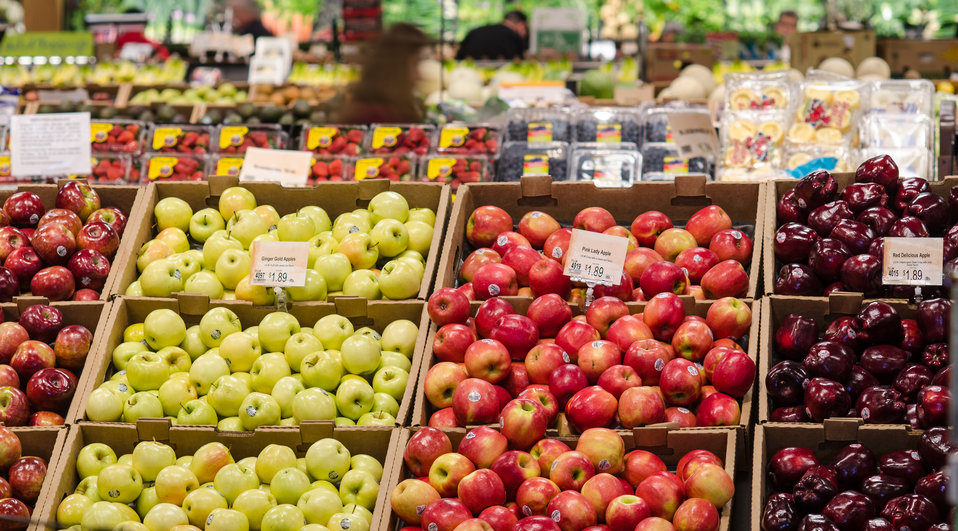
Produce at a grocery store in Fairfax, Virginia, on March 3, 2011.